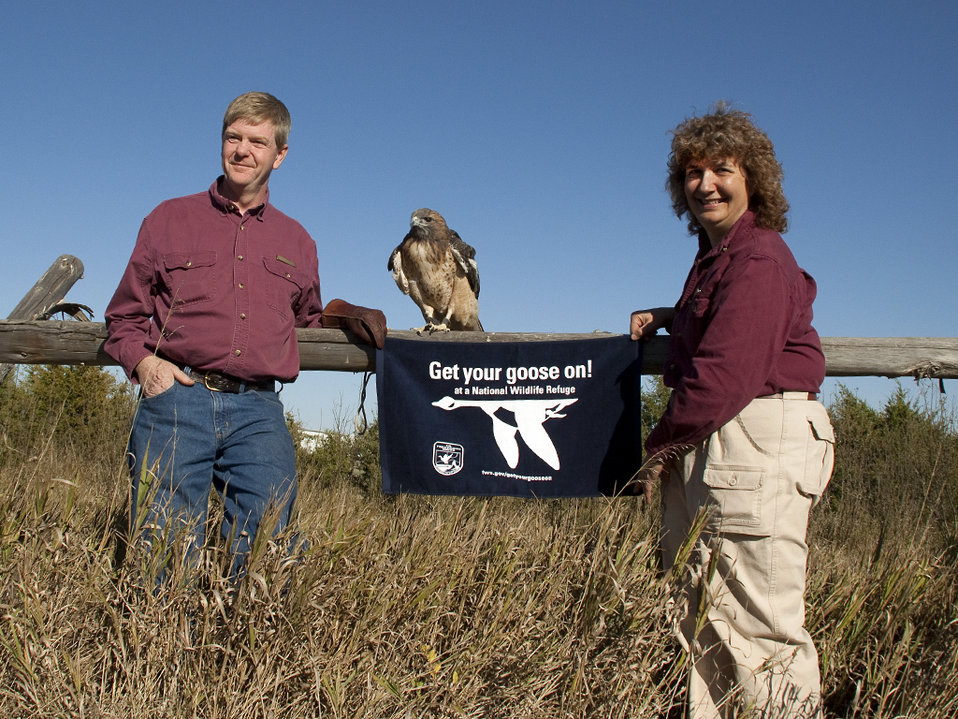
Get Your Goose On! - Raptor Style!

During Huron Wetland Management District's 2012 Prairie Festival, visitors were treated to an up close and personal look at various birds of prey.